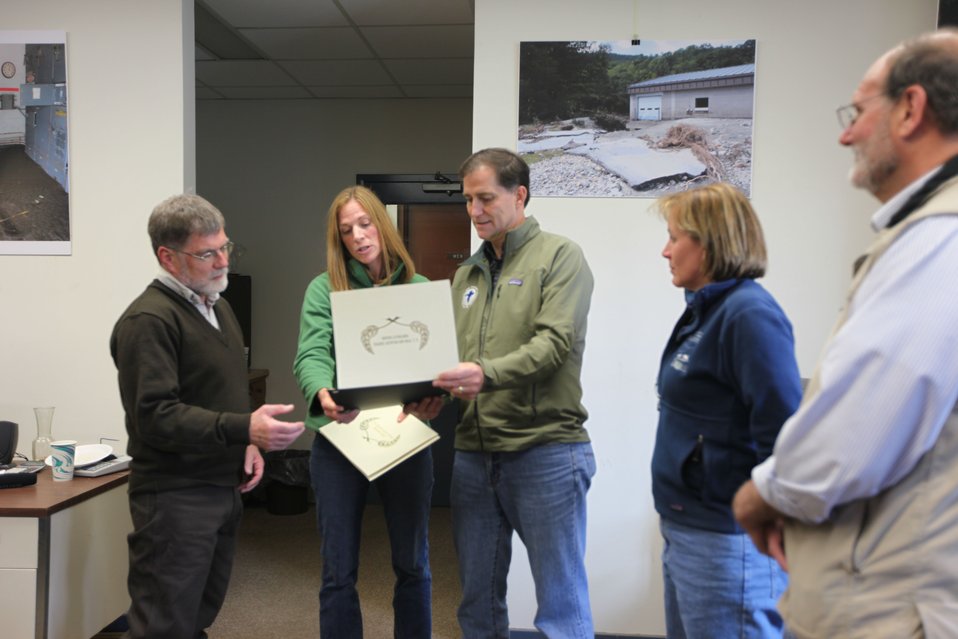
Special Award for Ken Gillette

U.S. Fish & Wildlife Service Director Dan Ashe visits the Northeast Region
for a tour of the White River National Fish Hatchery in Bethel, Vermont on
April 27, 2012. The hatchery was devastated by Tropical Storm Irene and
Dan Ashe had the chance to meet and thank the staff for their heroic work.
Director Ashe also visited restoration/flood response/fish passage project
sites in Rochester, Vermont and met with local officials and staff from the
White River Partnership.